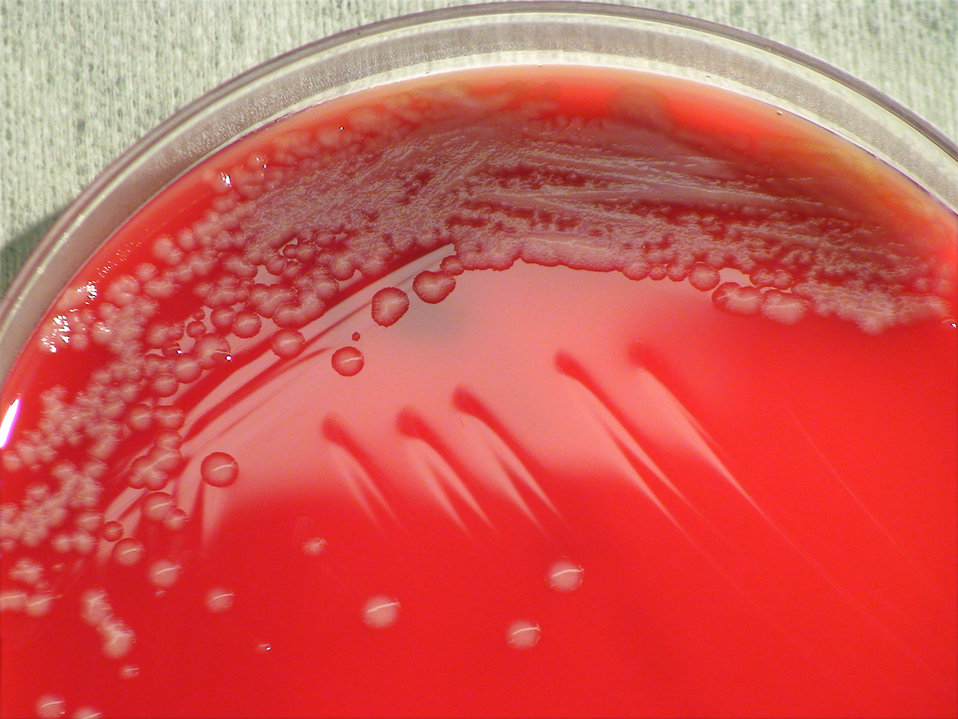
This photograph depicts the colonial morphology displayed by Gram-positive Bacillus megaterium bacteria, which was grown on a medium of sheep's blood agar (SBA), for a 24 hour time period, at a temperature of 37�C. The overall colonial morphology displayed by B. megaterium is very similar to that displayed by B. anthracis. See PHIL 12382, and 12384, for other views of this culture plate, and these bacterial colonies.